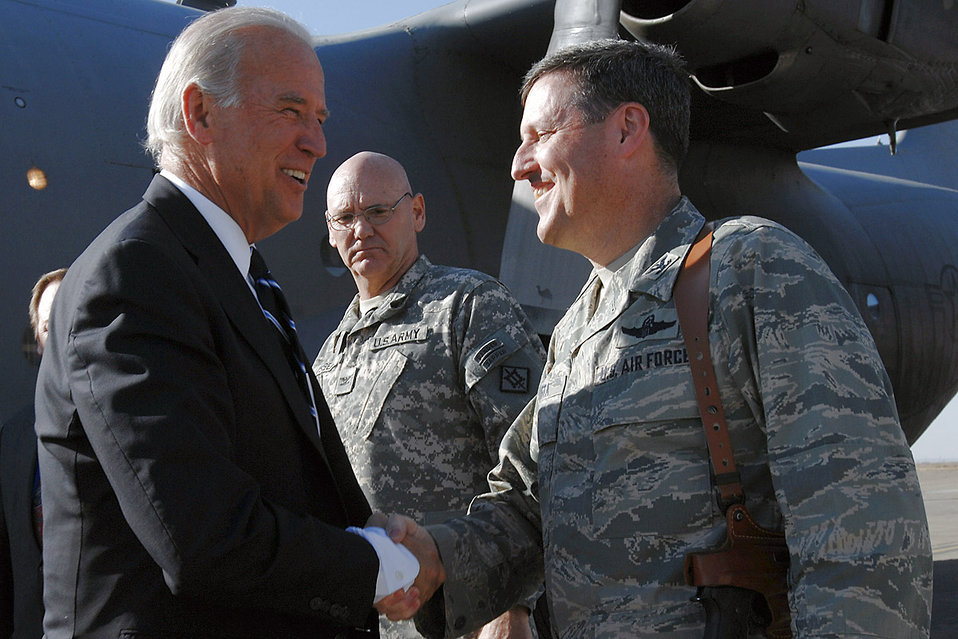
Kirkuk servicemembers host vice president-elect

Col. John Costa greets Vice President-elect Joe Biden upon his arrival Jan. 13 to Kirkuk Air Base, Iraq. Colonel Costa, who is deployed here from Maxwell Air Force Base, Ala., was one of several military leaders who welcomed the Delaware senator and Senate Foreign Relations Committee chairman. Colonel Costa is the 506th Air Expeditionary Group commander.